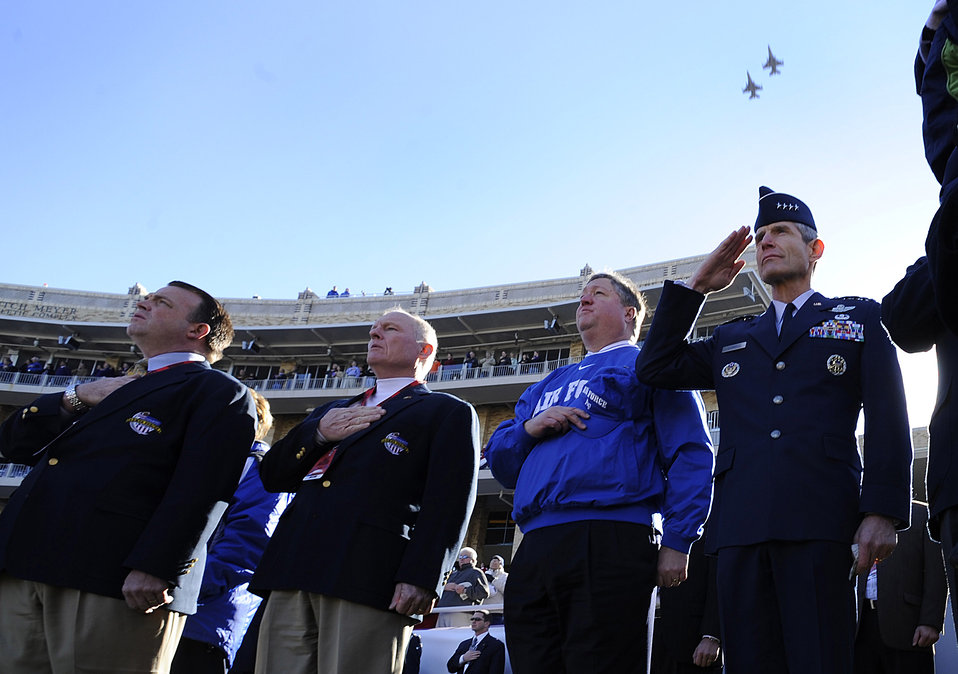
Armed Forces Bowl Game

Secretary of the Air Force Micheal B. Donley (center) and Air Force Chief of Staff Gen. Norton A. Schwartz (right) salute during the national anthem while F-16s from the 301st Fighter Wing perform a fly-over before the Armed Forces Bowl game between the U. S. Air Force Academy and the University of Houston.